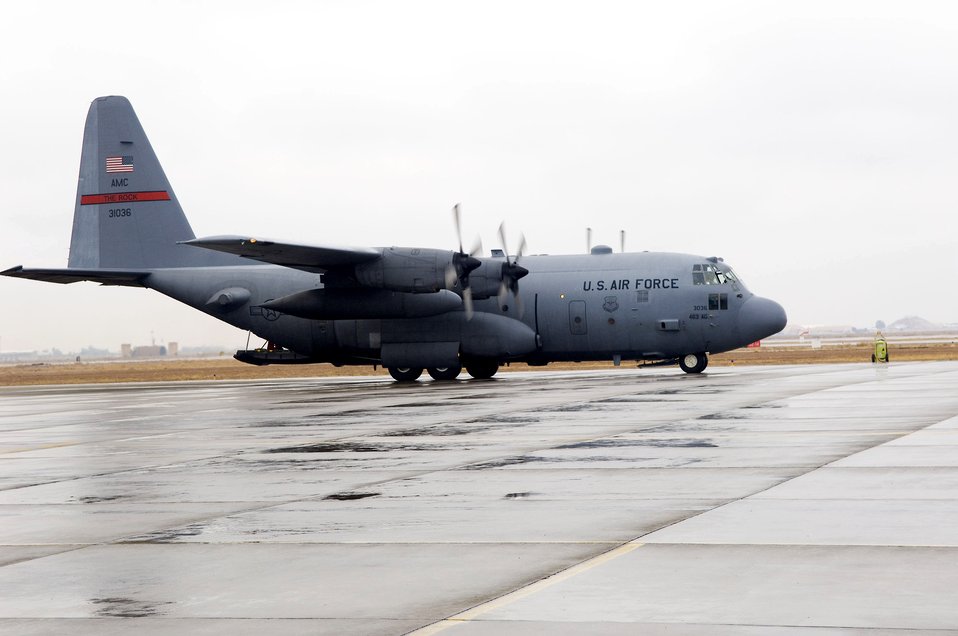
Tactical airlift key to winning war on terrorism

A C-130 Hercules taxies on the runway after the crew picked up military members from a forward operating base in Iraq Jan 11 at a Southwest Asia air base. C-130s assigned to the 332nd Air Expeditionary Wing moved more than 4,500 tons of cargo and 33,500 passengers during this air and space expeditionary rotation.